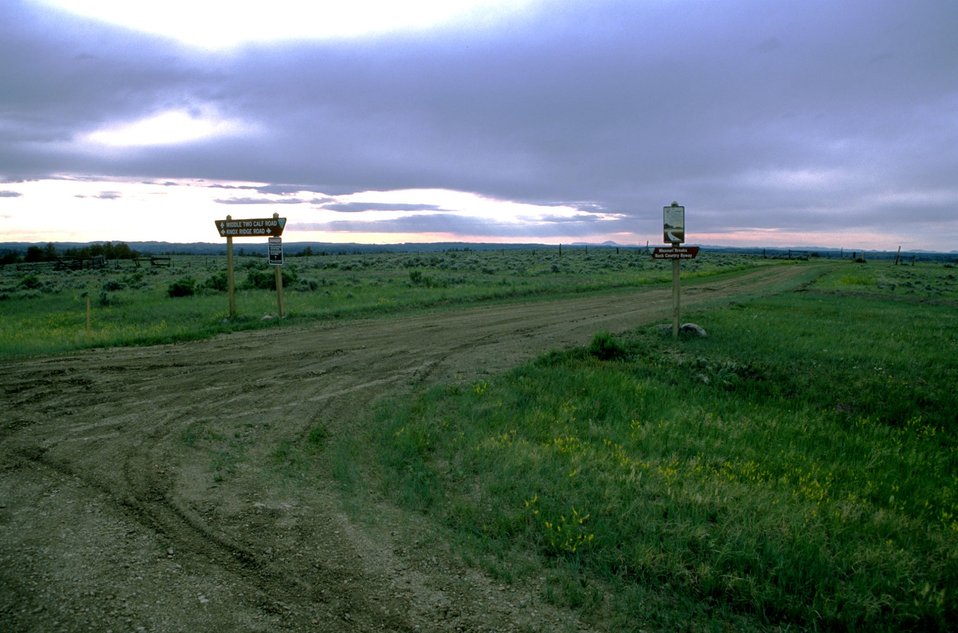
Missouri Breaks Back Country Byway